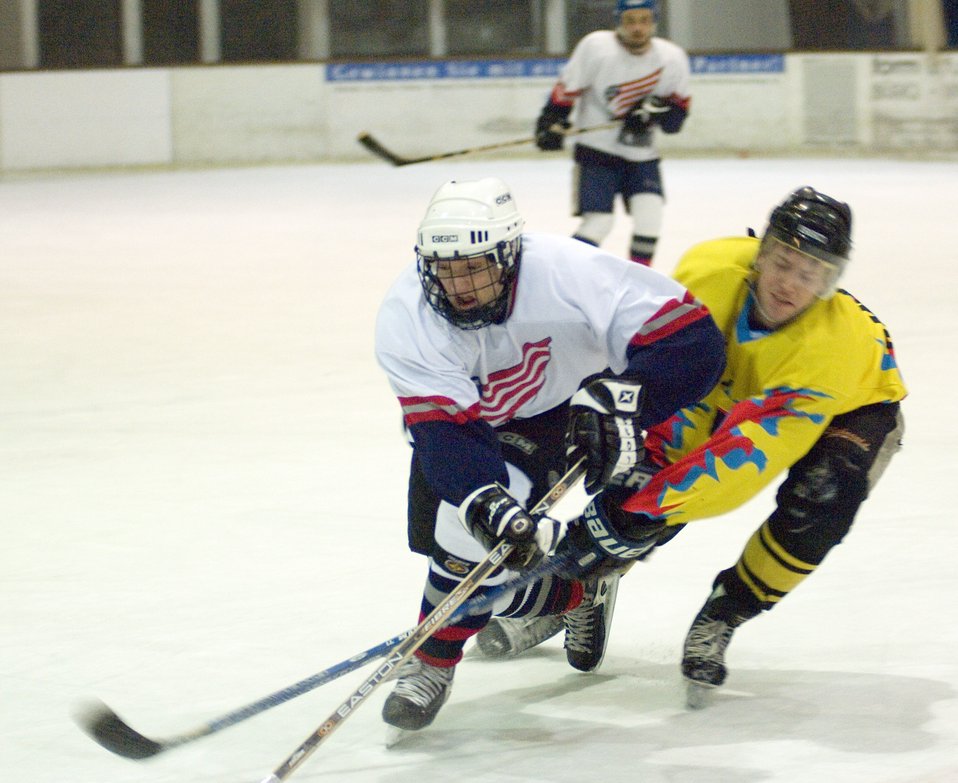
Eagles glide toward tourney

EPPELHEIM, Germany (AFPN) -- Capt. Kris Uber (left) races to the puck against a player from the Eppelheim Hawks. The KMC Eagles won 6-4. The Kaiserslautern Military Community hockey team is made up of 30 players in different skill levels varying from semi-pro and college to players experiencing their first organized game. Captain Uber is with the 76th Airlift Squadron at Ramstein Air Base, Germany.